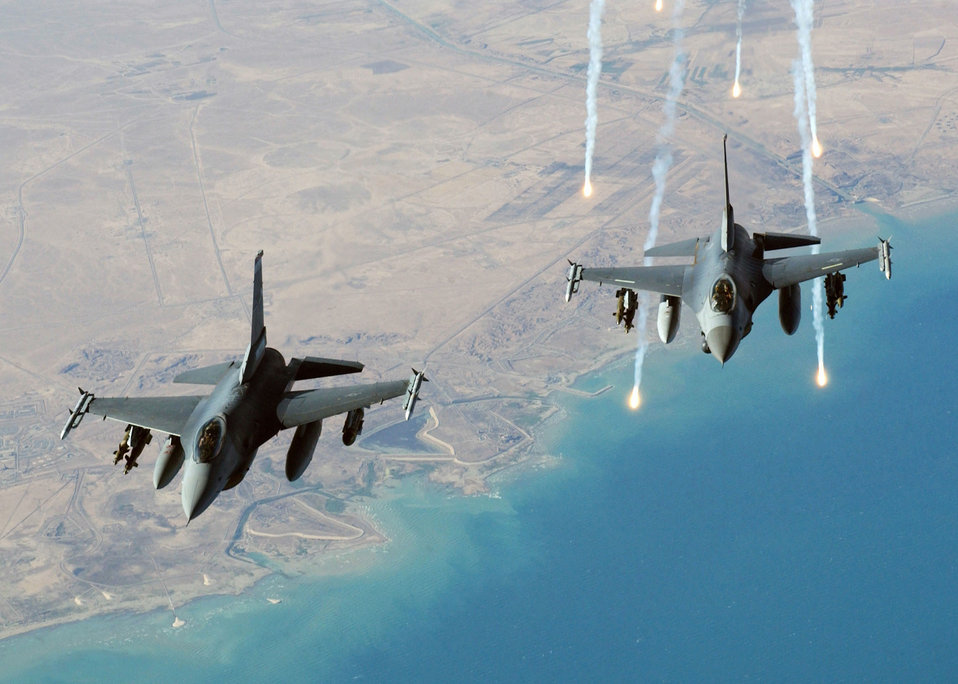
Nov. 4 airpower summary: F-16s protect coalition forces

An F-16 Fighting Falcon launches electronic countermeasure flares following an aerial refueling mission over Iraq. F-16s provide armed aerial overwatch and is a compact, multirole fighter aircraft with high maneuverability.